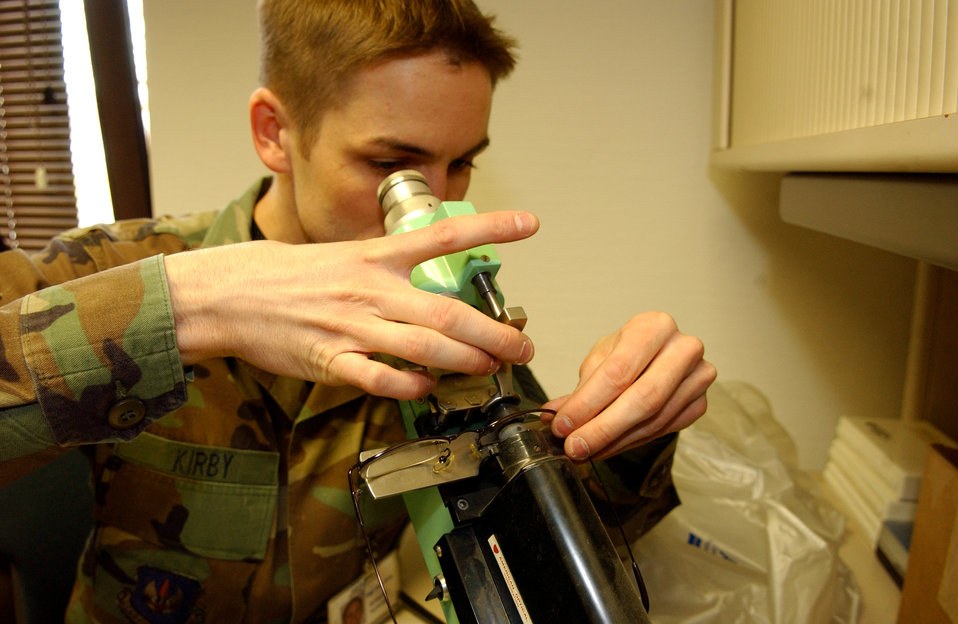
Eye check

Staff Sgt. Allen Kirby checks a pair of glasses for lens prisms with a microscope. He is an optometry technician assigned to the 435th Aerospace Medicine Squadron at Ramstein Air Base, Germany.